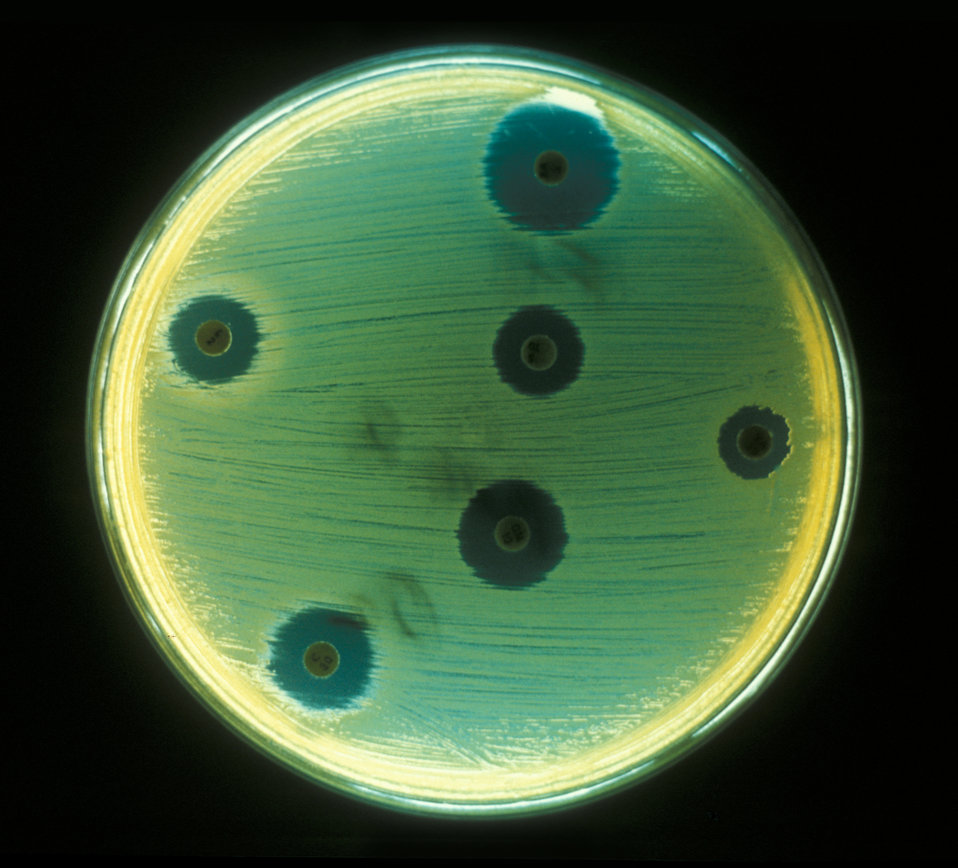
Aerobic bacteria, Staphylococcus aureus, cultured on an agar plate for drug sensitivity test in an anaerobic environment.